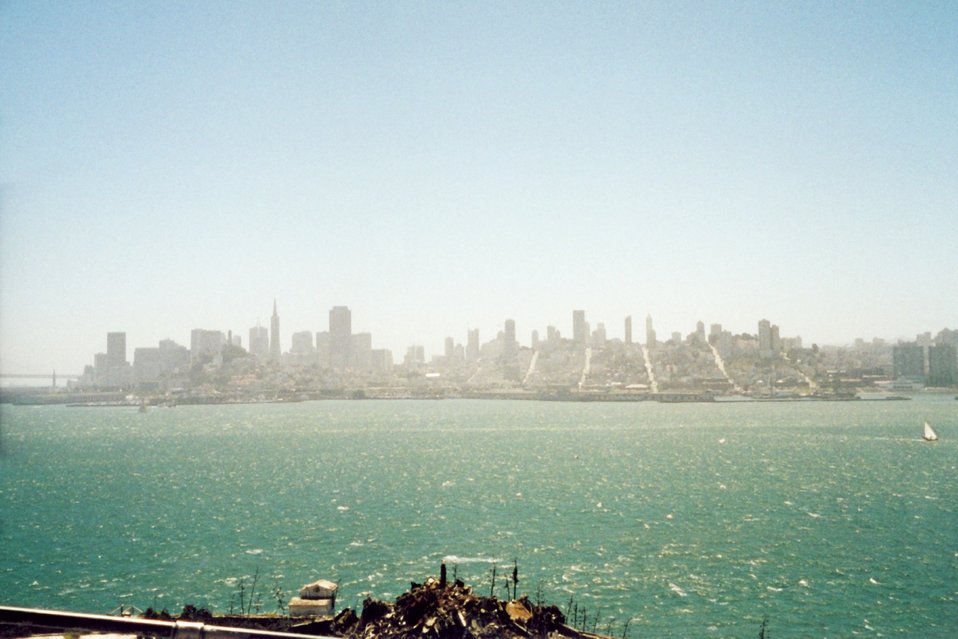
Looking towards San Francisco from Alcatraz.